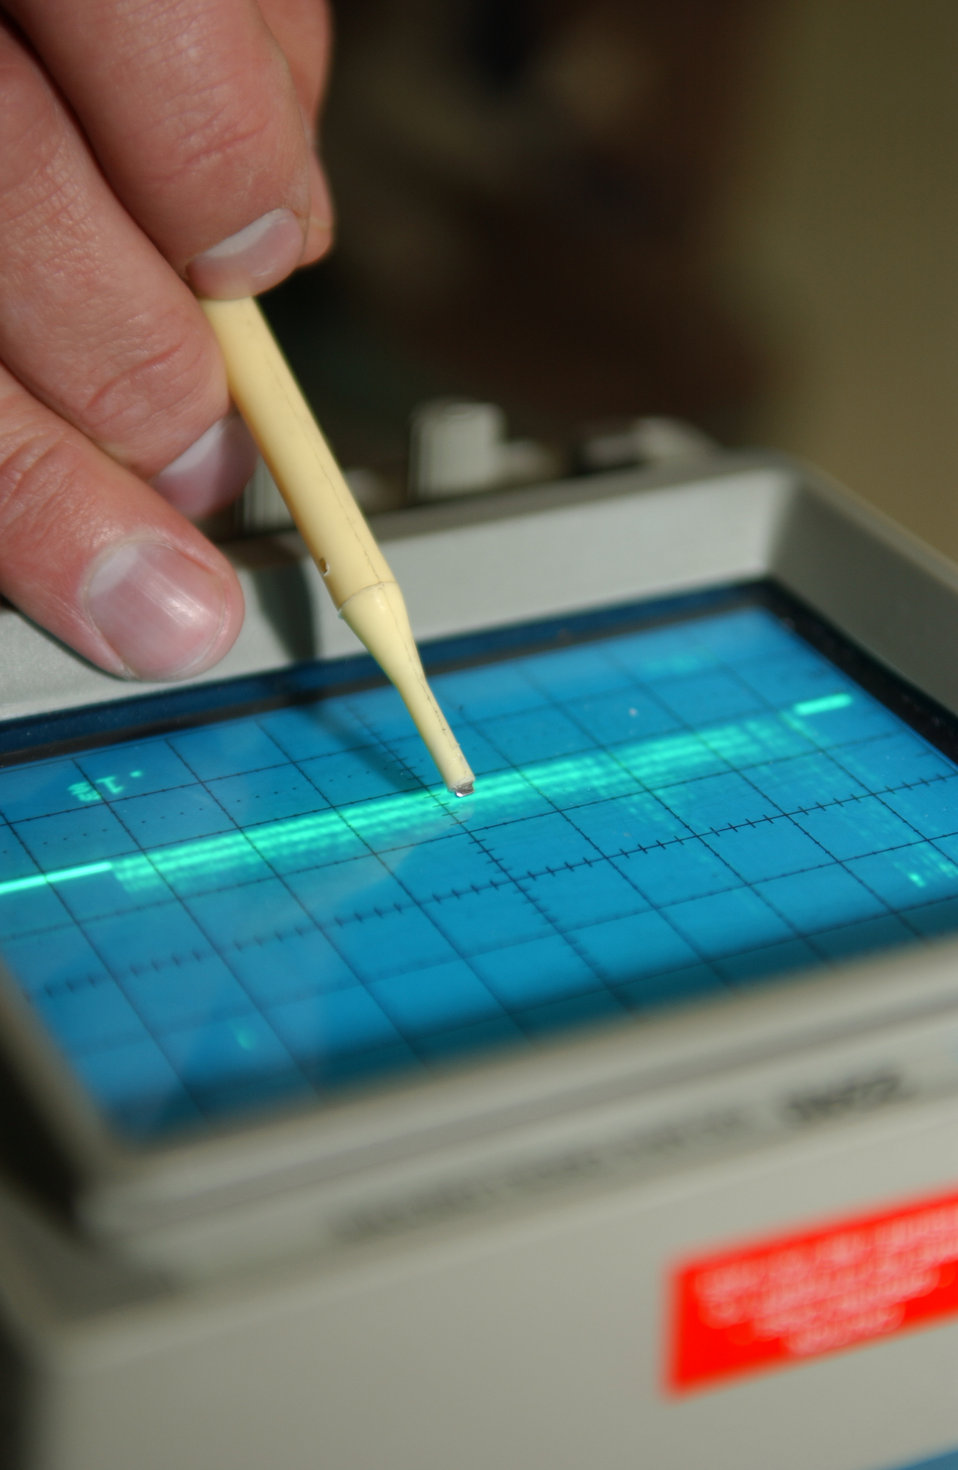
High frequencies

SPANGDAHLEM AIR BASE, Germany -- Airman 1st Class Rocky Weinman uses an oscilloscope that measures video frequencies using a time versus voltage format here Sept. 2. Airman Weinman is a radar maintenance technician from the 52nd Communications Squadron.